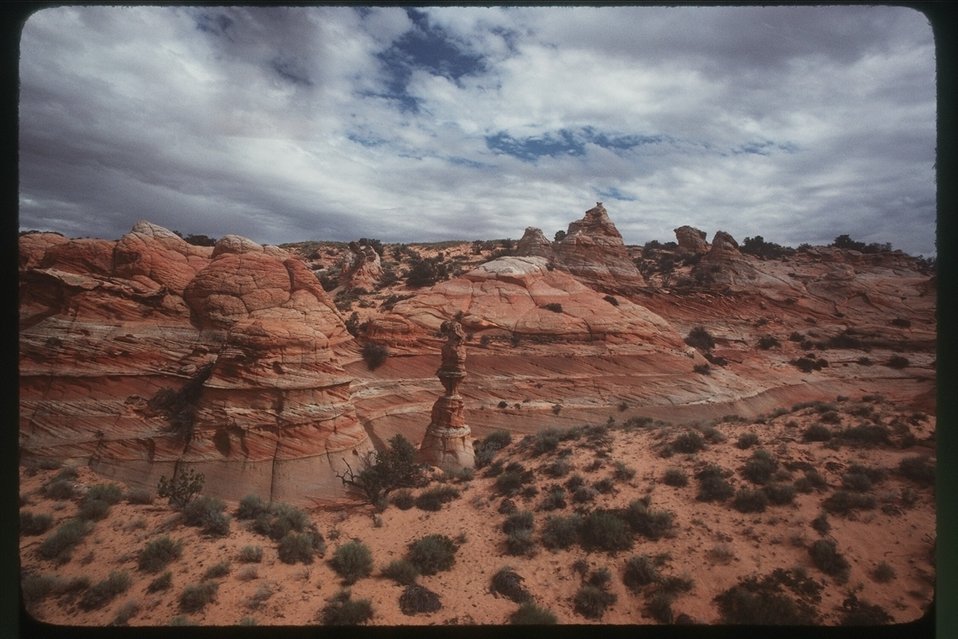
The 112,500-acre Paria Canyon-Vermilion Cliffs Wilderness lies in Coconino (Arizona) and Kane (Utah) counties, approximately 10 miles west of Page, Arizona.